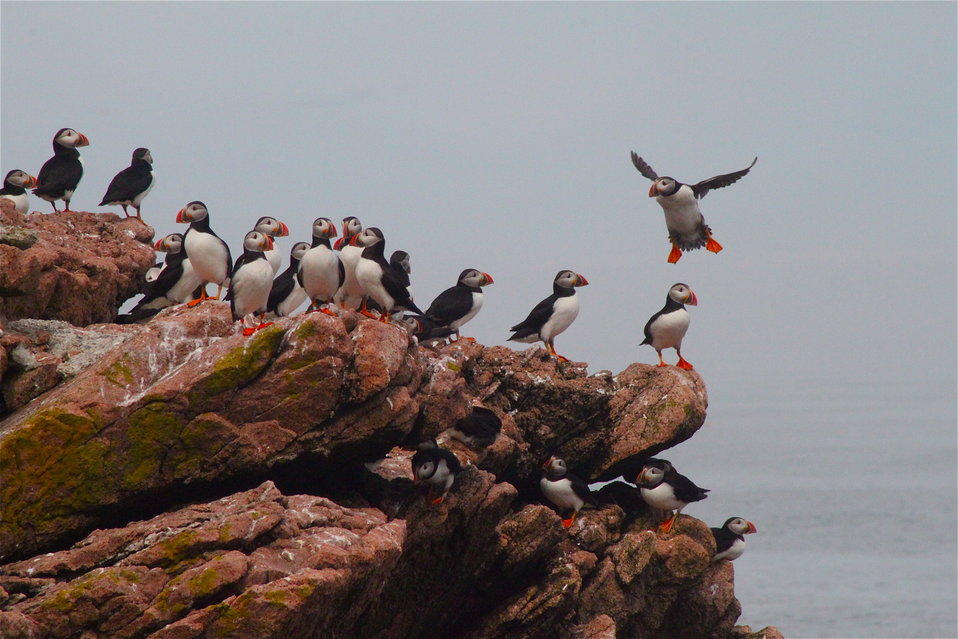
Puffin Landing